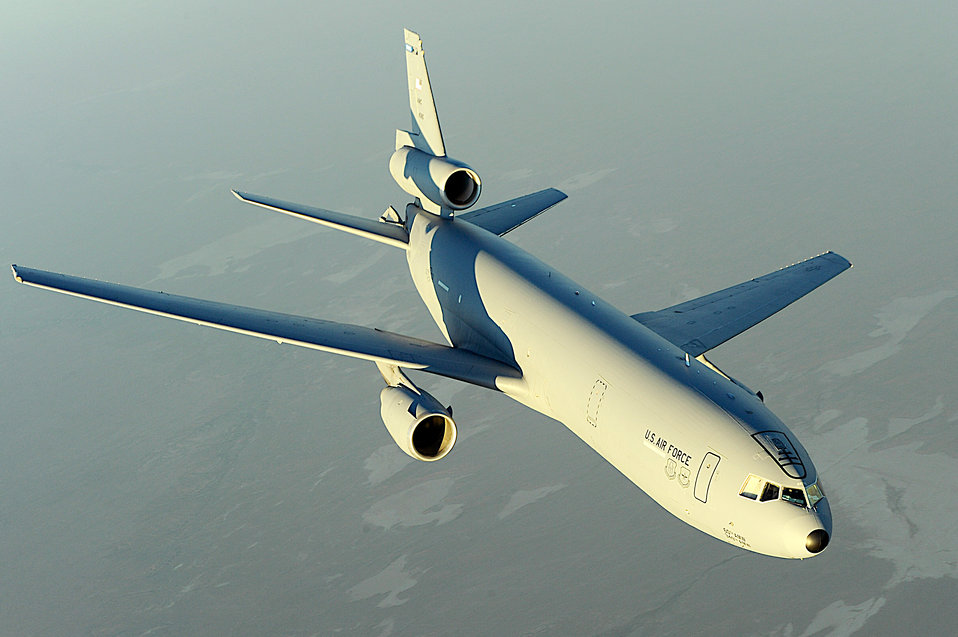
Dec. 11 airpower summary: KC-10s sustain fighters

A KC-10 Extender supports air refueling missions over Afghanistan. Air Force and coalition tankers flew 43 sorties and off-loaded approximately 3.3 million pounds of fuel to 254 receiving aircraft. The KC-10 is assigned to the 908th Expeditionary Aerial Refueling Squadron in Afghanistan.